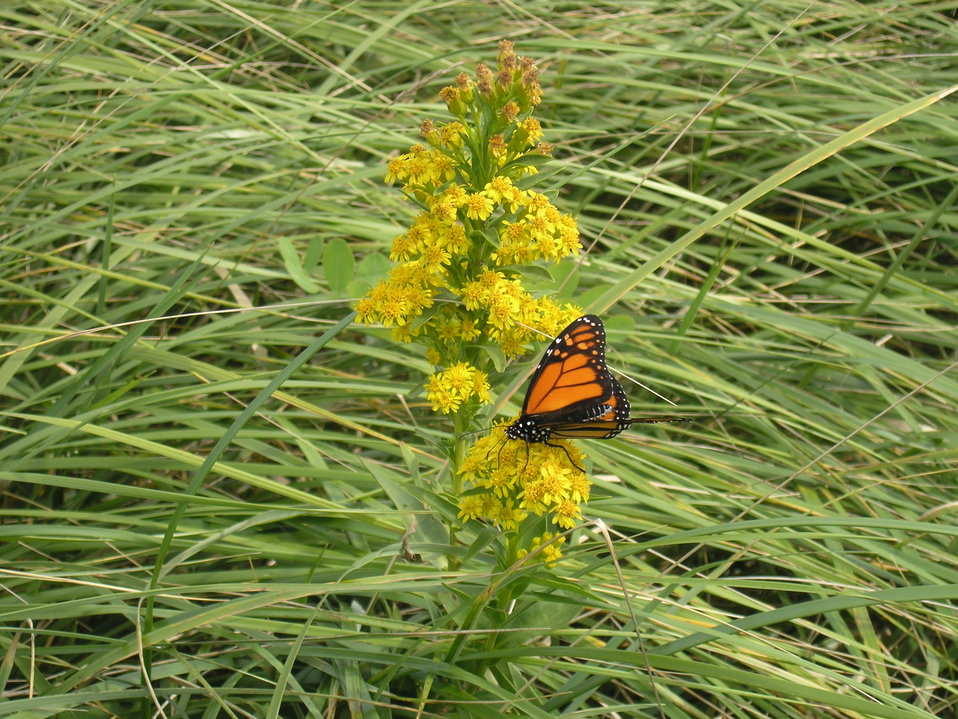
Monarch on Goldenrod

Hampton Beach, NH.